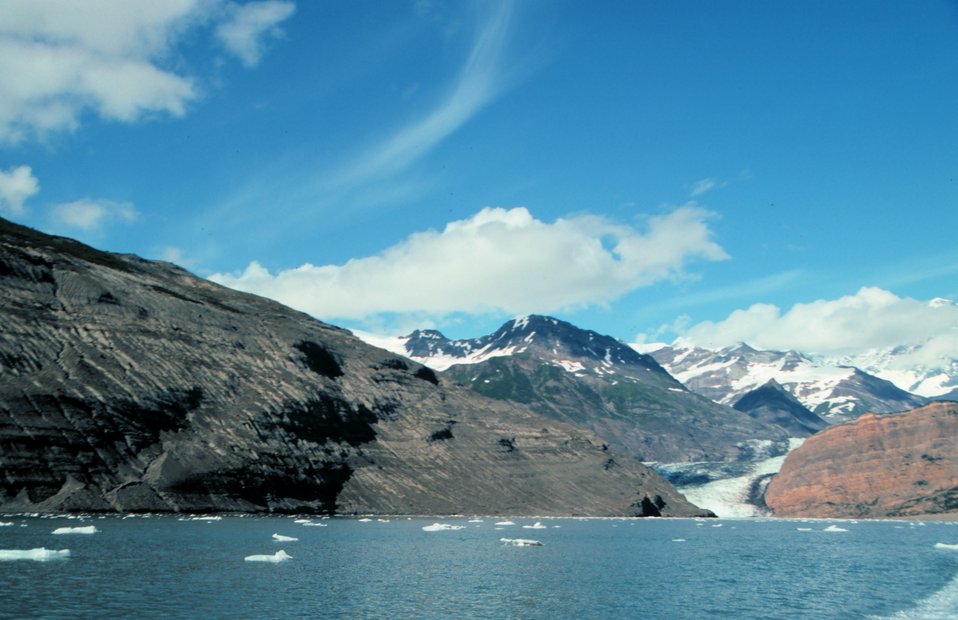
The head of Tann Fjord.